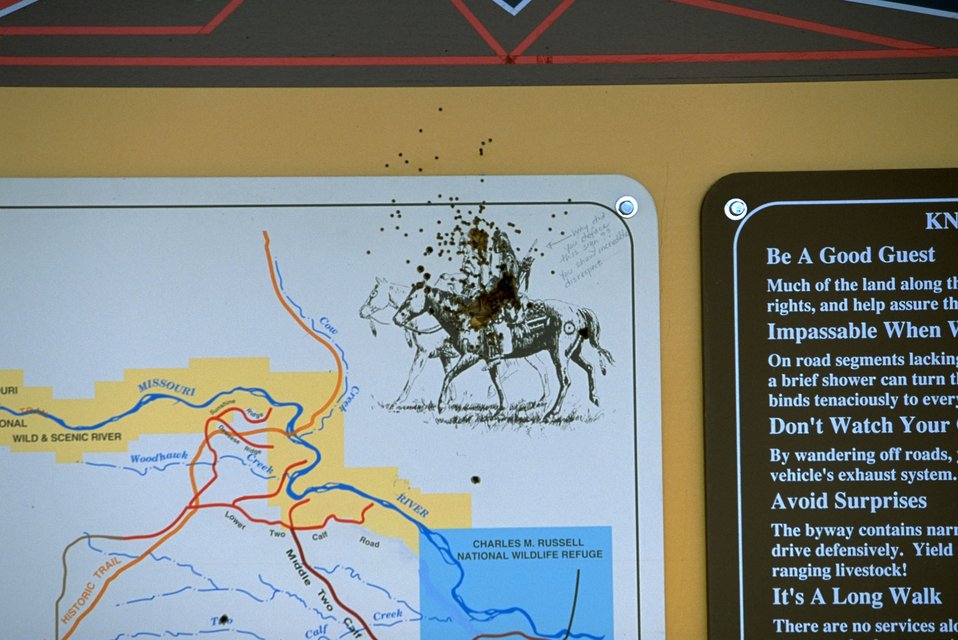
Bullet holes in Kiosk, with a note from a displeased visitor